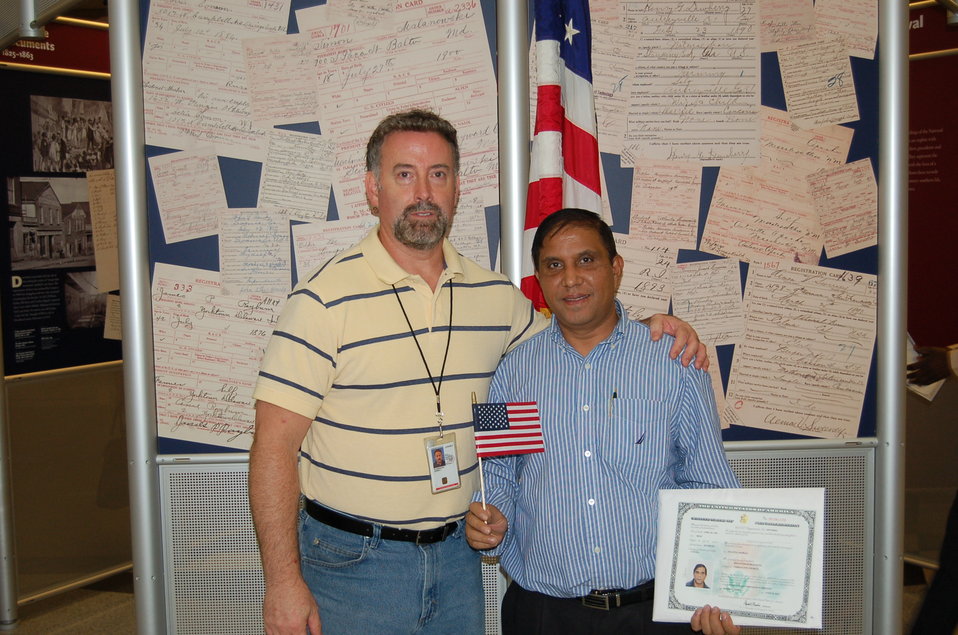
New Citizens